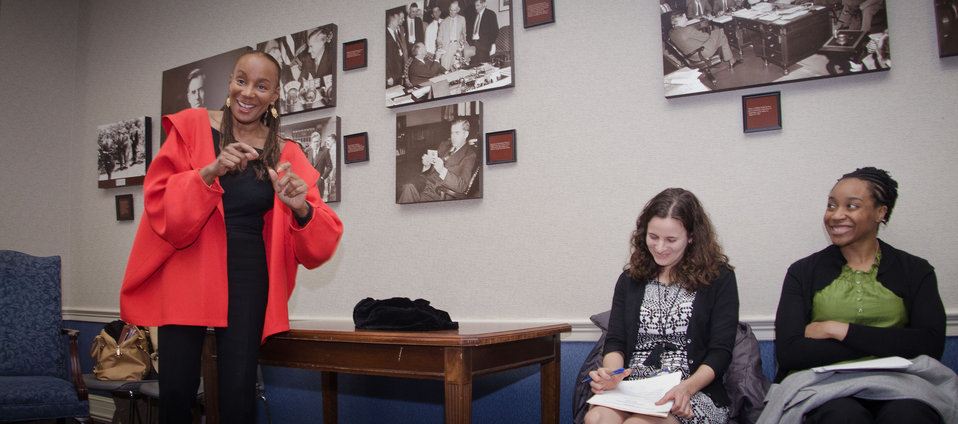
National CARES Mentoring Movement founder and Editor-in-Chief Emeritus, Essence magazine, Susan Taylor (red coat), met for a cross-departmental discussion with Department of Agriculture and Department of Energy personnel in the Whitten Building, U.S. Department of Agriculture, in Washington, D.C., on Tuesday, February 28, 2012. This not-for-profit organization is dedicated to recruiting and connecting mentors with local youth and mentoring organizations to help guide under-resourced children to academic and social success across the country. This discussion provided a continuation of the White House Policy in Action conference that took place in November 2011. The focus of the discussion was about how existing federal programs and administration priorities can be leveraged with her organization, especially as it relates to science, technology, engineering and mathematics (STEM) literacy, education and rural youth.